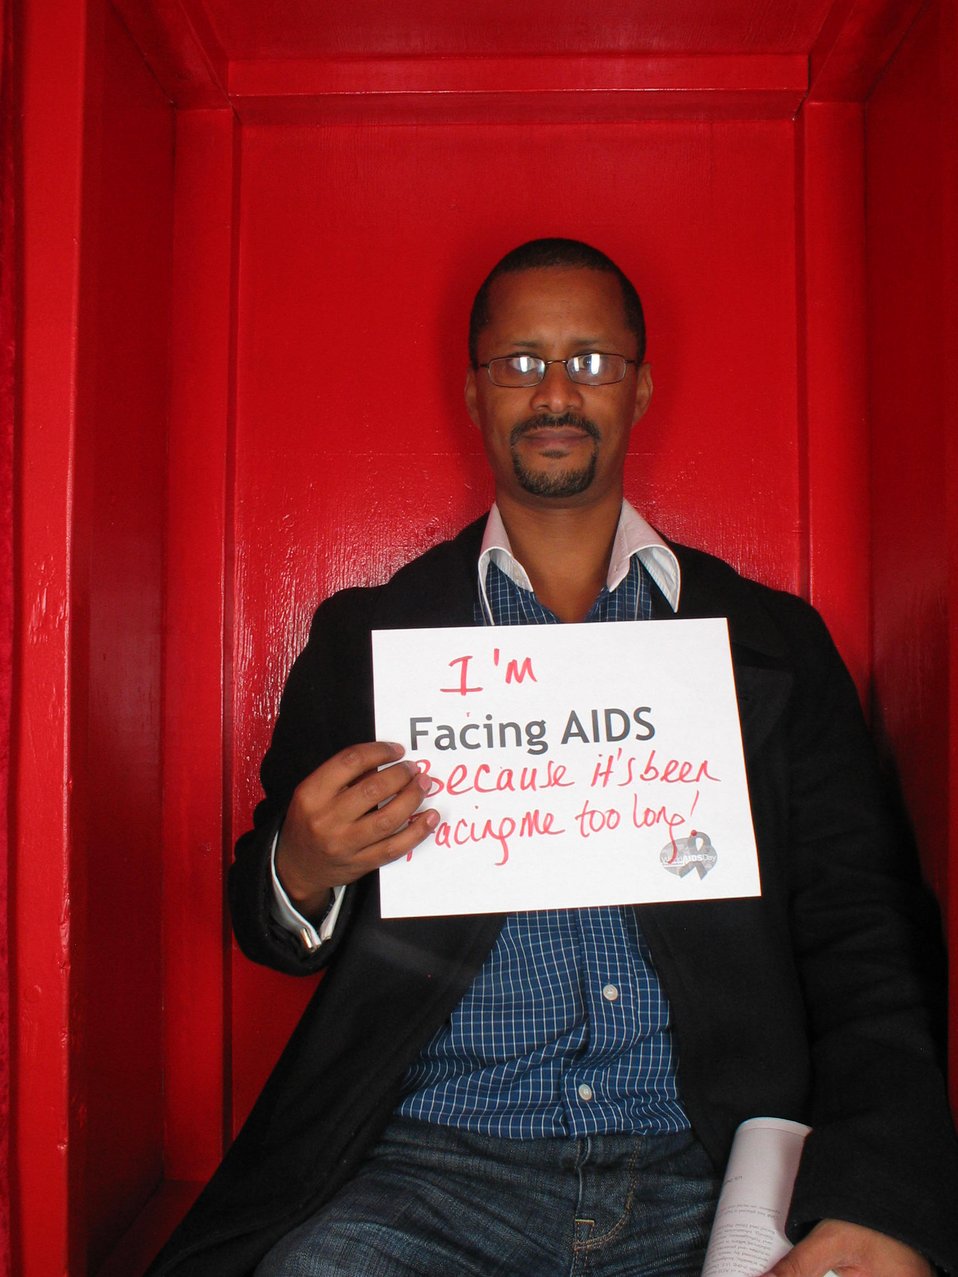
I'm Facing AIDS because its been facing me too long!